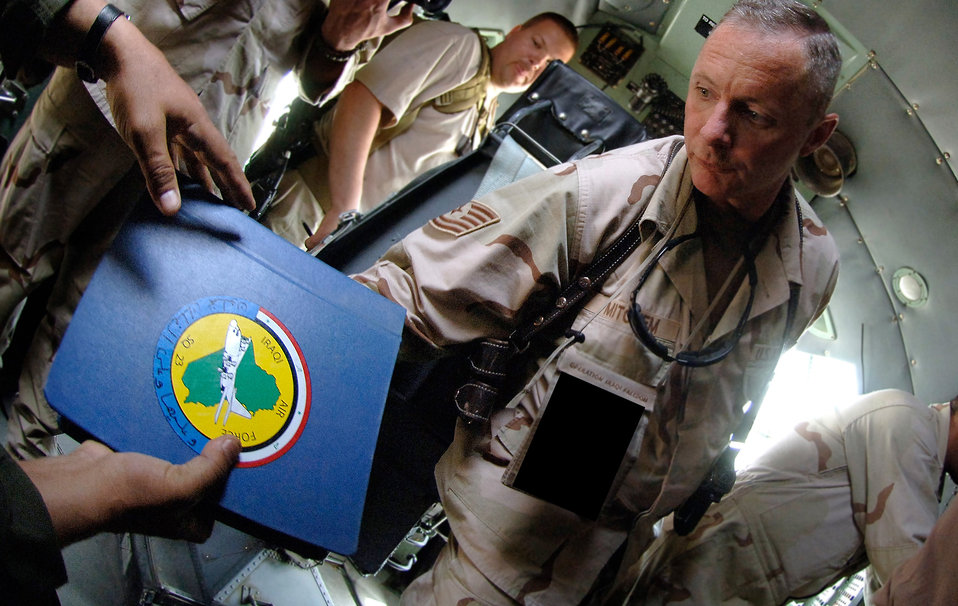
Airmen assist Iraqi Air Force reconstitution

Tech. Sgt. Robert Mitchem is handed an Iraqi technical manual to help him mentor Iraqi Airmen on proper repair of an Iraqi Air Force C-130 Hercules navigational panel element. Sergeant Mitchem is assigned to the 370th Air Expeditionary Advisory Squadron at New Al Muthana Air Base, Baghdad, Iraq. The squadron's mission is to restart the Iraqi Air Force.